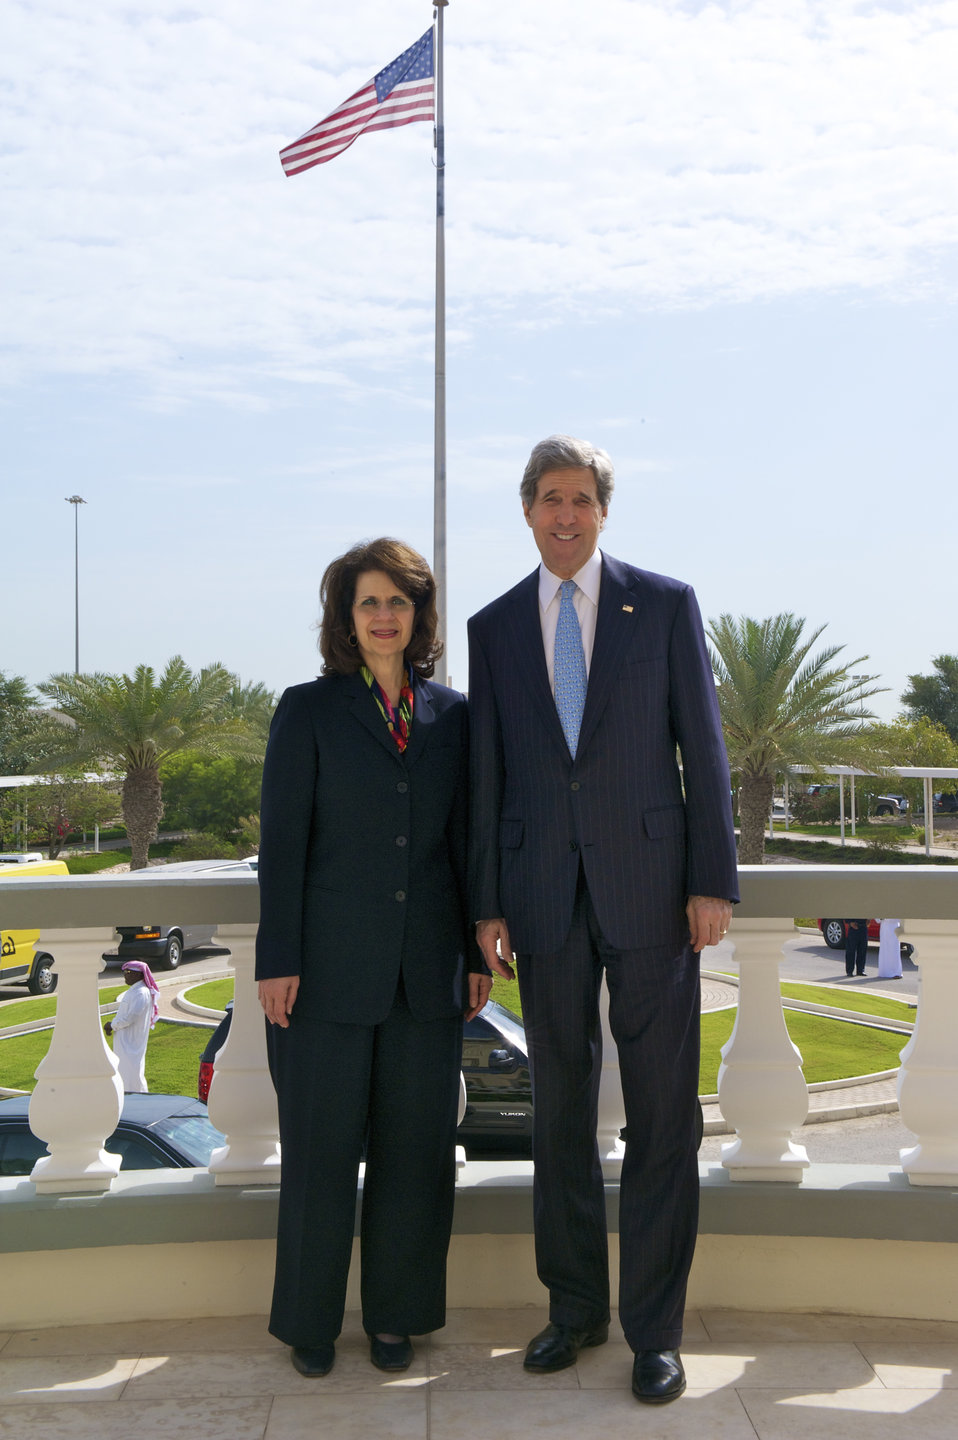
Secretary Kerry With Ambassador Ziadeh

U.S. Secretary of State John Kerry poses for a photo U.S. Ambassador to Qatar Susan Ziadeh at the U.S. Embassy in Doha, Qatar, on March 6, 2013.